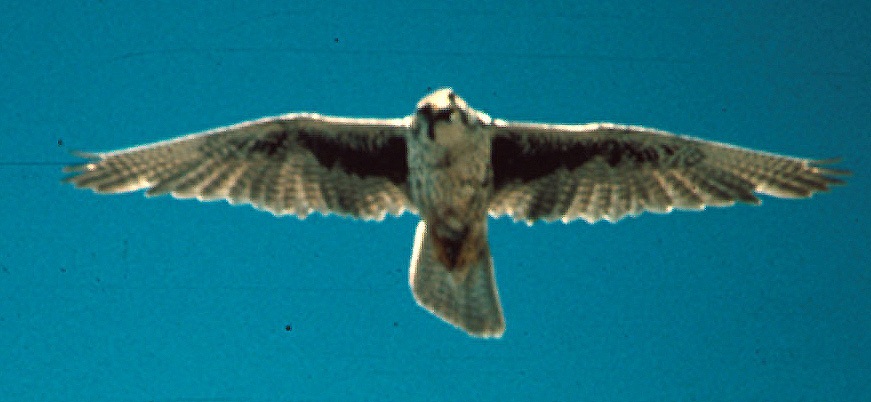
Hawk Owyhee Field Office LSRD Lower Snake River District